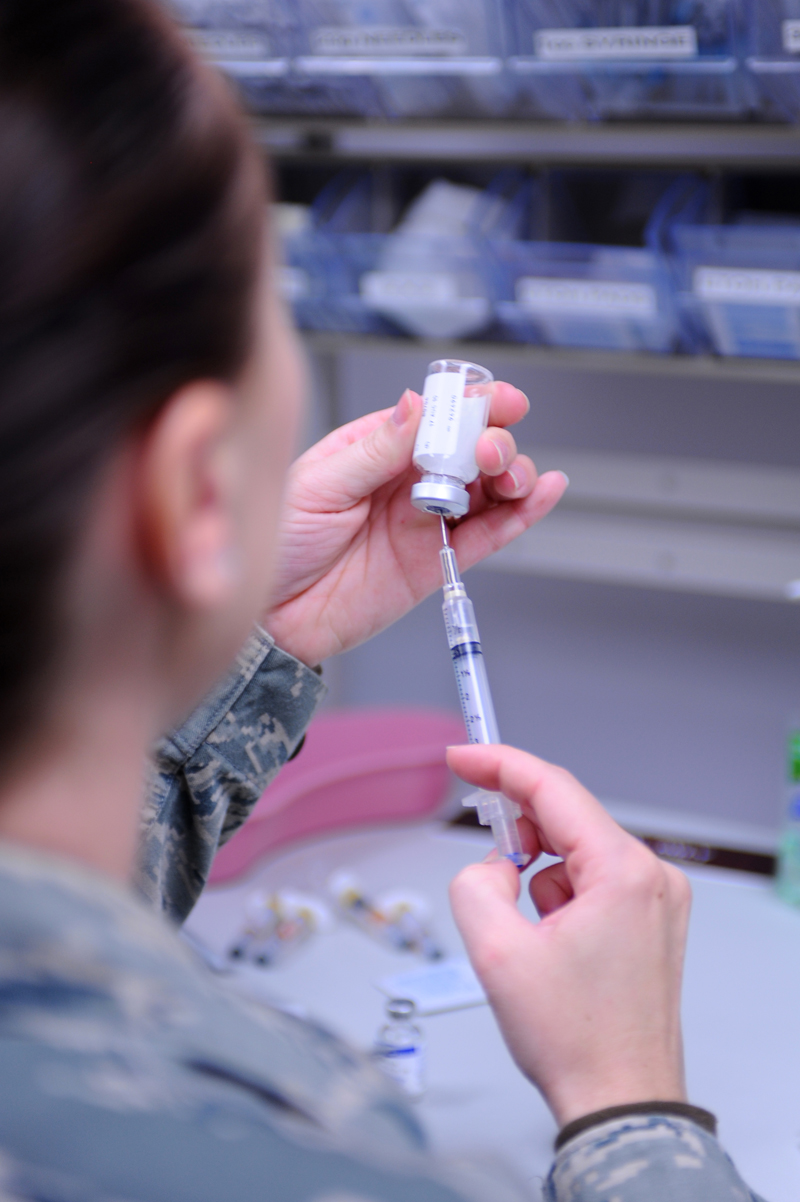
Another flu shot? Why it's important

Senior Airman Megan Knutson, a medical technician assigned to the 28th Medical Operations Squadron at Ellsworth Air Force Base, S.D., fills a syringe for a vaccination May 13, 2009.